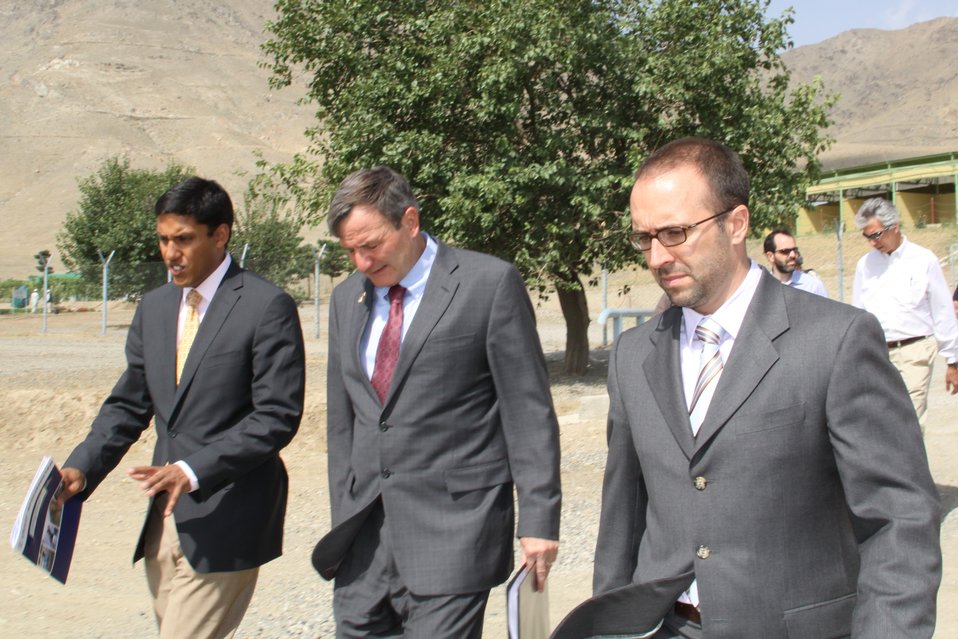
Badam Bagh Farm